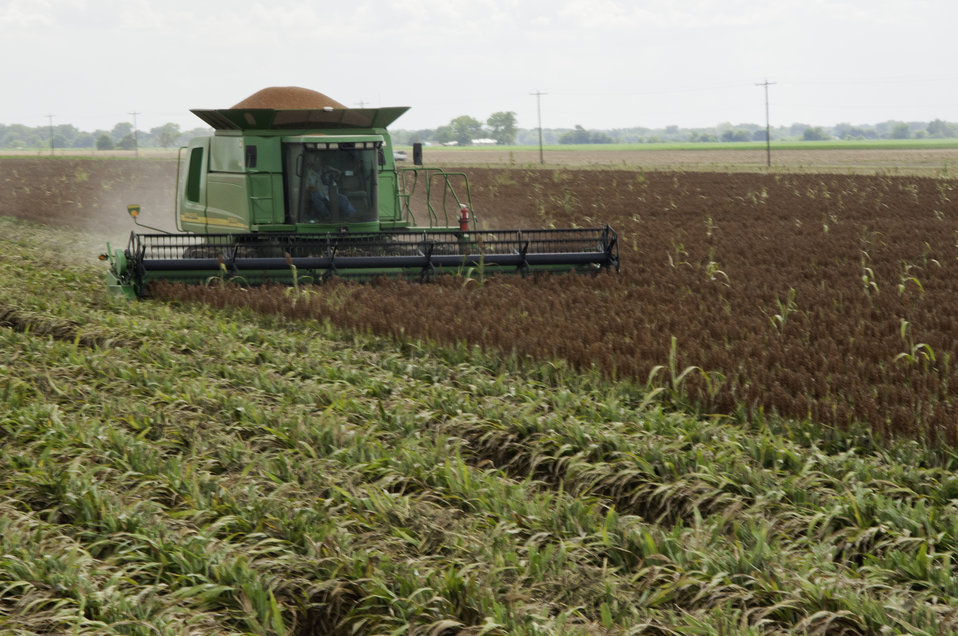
Grain sorghum is harvested on the Wilder Farms in Navasota, TX on Aug. 23, 2013.